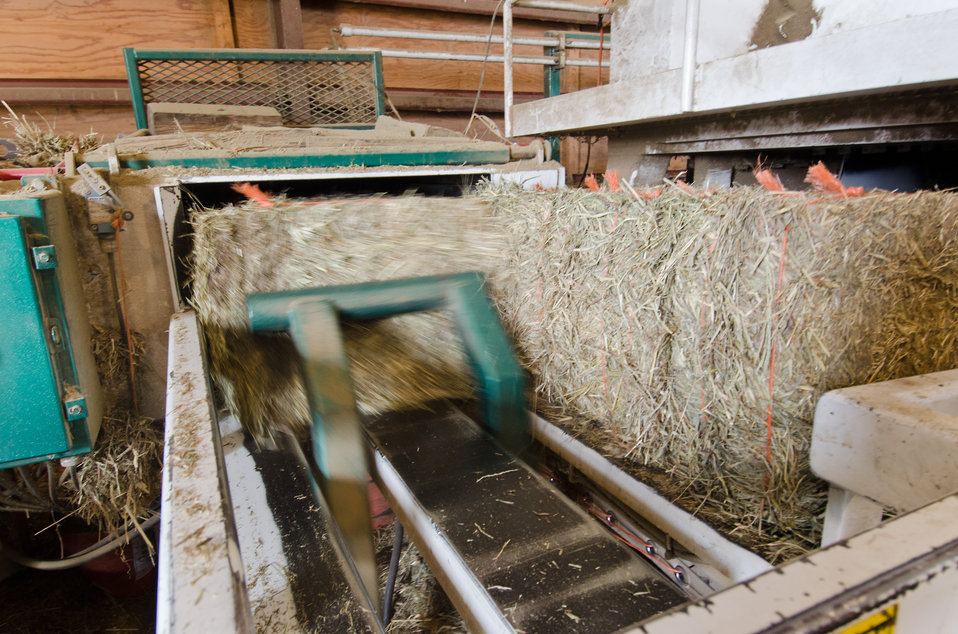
A hydraulic powered arm pushes a hay bale after being compressed at Heidel Hollow Farms, on Wednesday, April 20, 2011. A family owned farm since 1852 is a 1,800 acre operation in Germansville, PA. Led by David Fink, President of Heidel Hollow Farms, they mainly produce and compact hay for export and grow produce on 300 acres for local sale. With the financial help of the U.S. Department of Agriculture (USDA) an 896 panel solar array was recently installed on non farmable diversion ditches. Rated at 200 kilowatts, they project 240 megawatts of electricity to be produced each year, providing up to 70% of the farms electrical needs. Additionally, USDA financial assistance made it possible to replace the hay compactor’s diesel engines with clean low-maintenance, low operating cost electric motors to power the compactor's hydraulic system. The compactor increases the density of baled hay by two and half times for more efficient shipping to overseas customers.